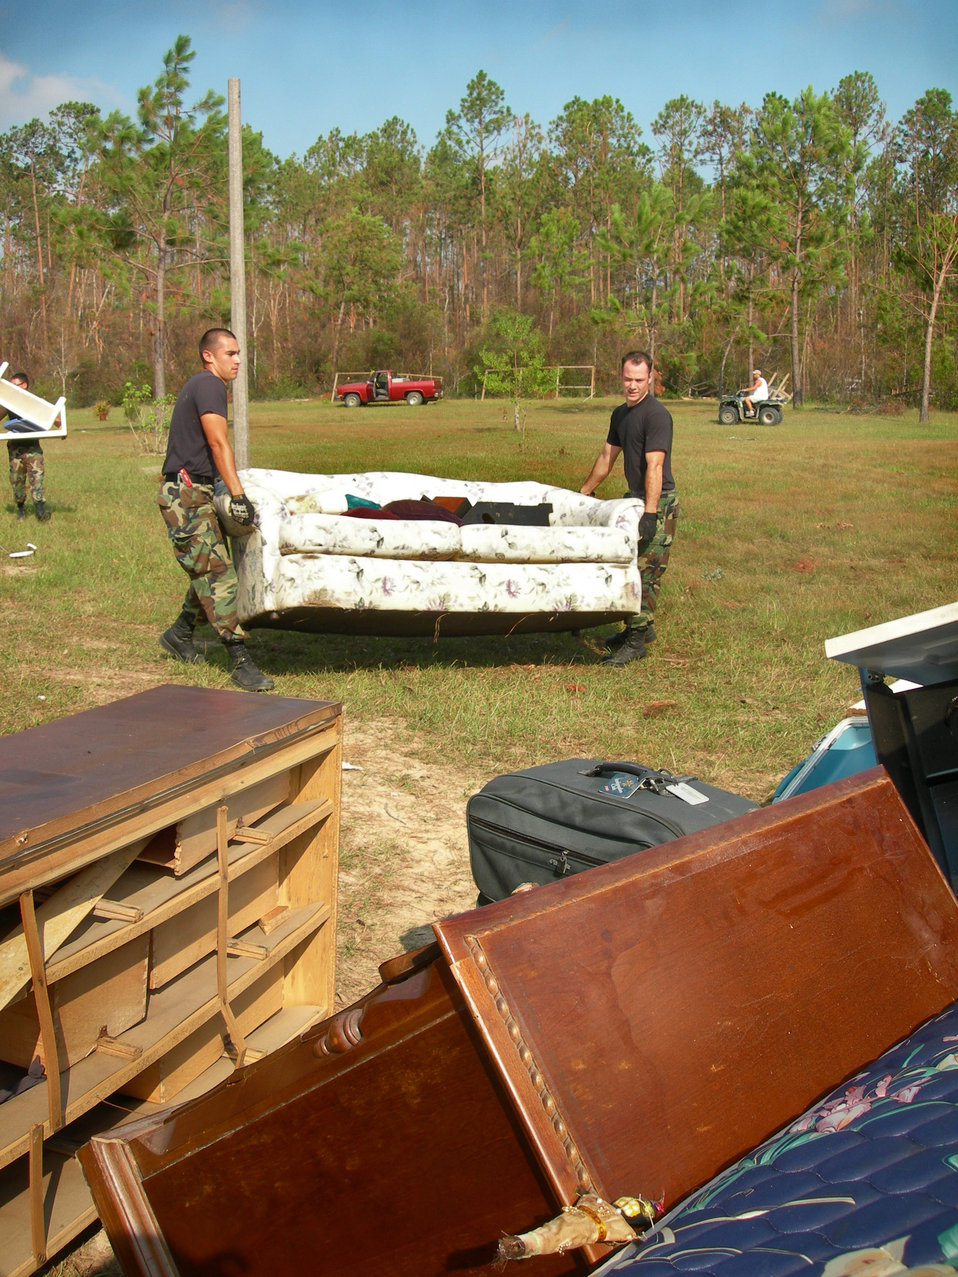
Engineers help clean up

BILOXI, Miss. -- Senior Airman Adrian Silerio (left) and 2nd Lt. Scott Thomas dispose of a couch from a home that was damaged by Hurricane Katrina. The Airmen are deployed to nearby Keesler Air Force Base from the 56th Civil Engineer Squadron at Luke AFB, Ariz.